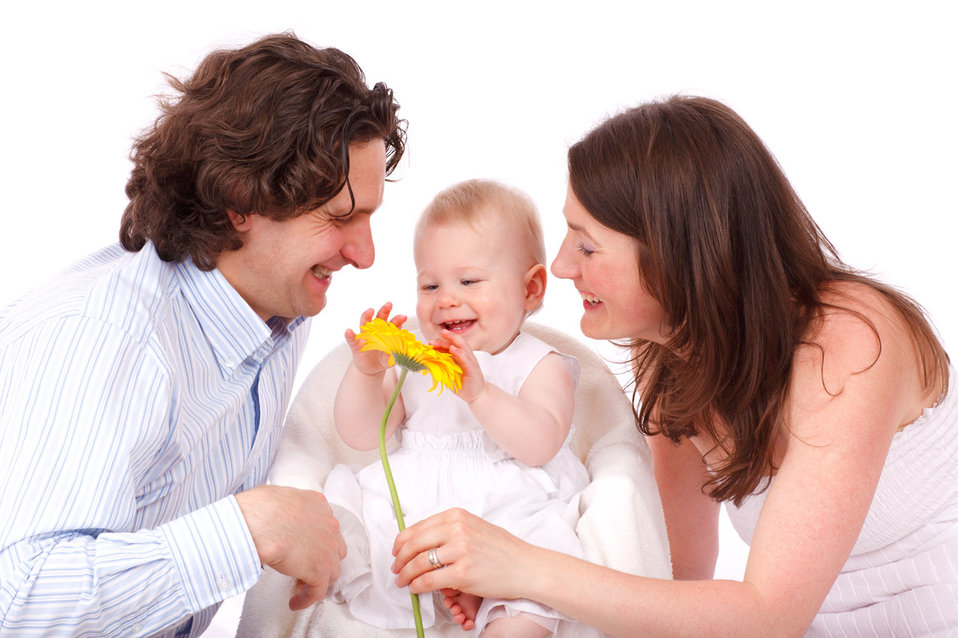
Happy family

Young happy family of three isolated on white background.